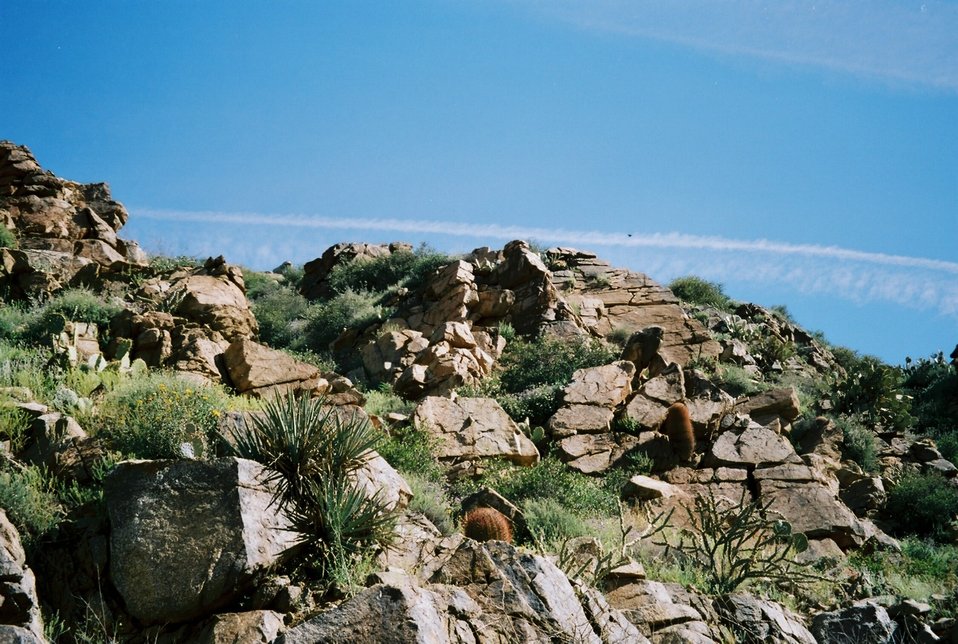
Agua Fria National Monument area.